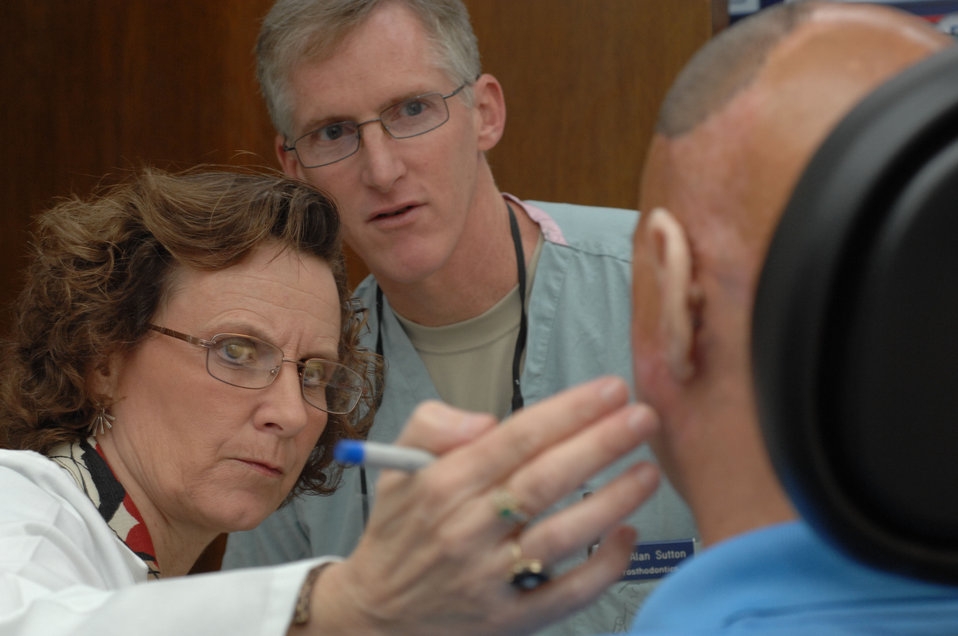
Wounded warrior gets perfect fit

Dr. Nancy Hansen and Col. (Dr.) Alan Sutton examine retired Army Staff Sgt. Shilo Harris, a wounded veteran, Oct. 5, 2010, as he is fitted for prosthetic ears at Wilford Hall Medical Center, Lackland Air Force Base, Texas. As the only clinically certified anaplastologist in the Department of Defense, Dr. Hansen works closely with specialists in the Maxillofacial Prosthetics Fellowship Program building prosthetics for wounded warriors. Dr. Sutton is the 59th Medical Wing fellowship program director.